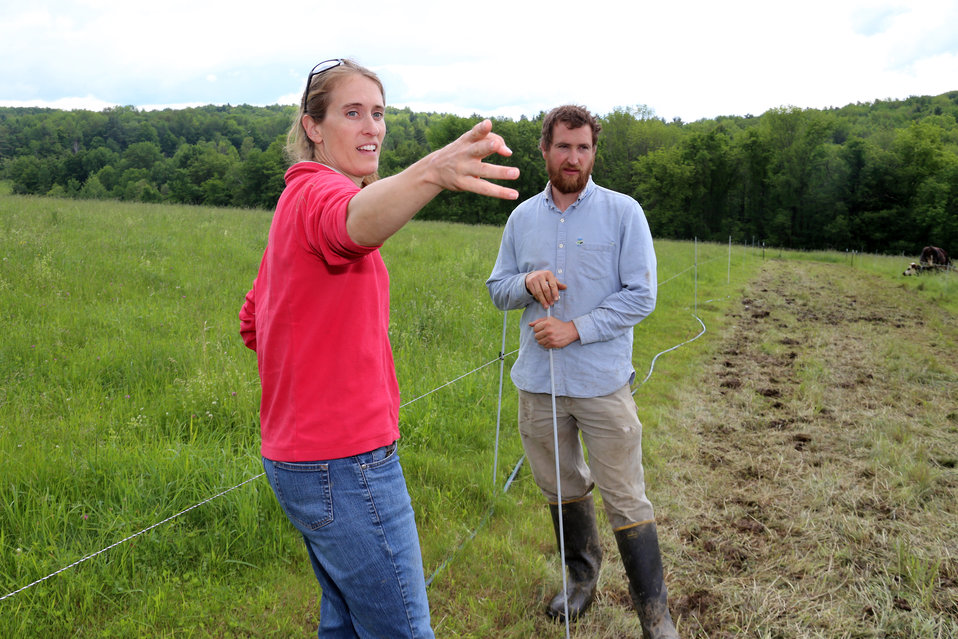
Title of Photograph

U.S. Department of Agriculture (USDA) Natural Resource Conservation Service (NRCS) District Conservationist Kate Parsons discusses pasture management with Blue Hill Farm owner Sean Stanton in Great Barrington, MA.